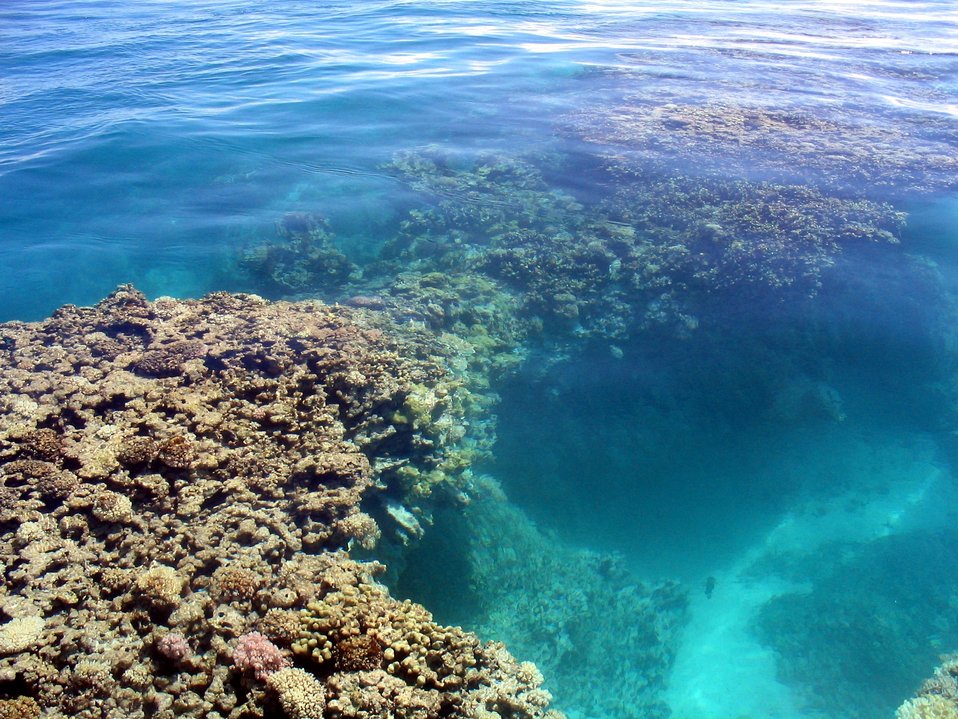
Shallow reef scene.